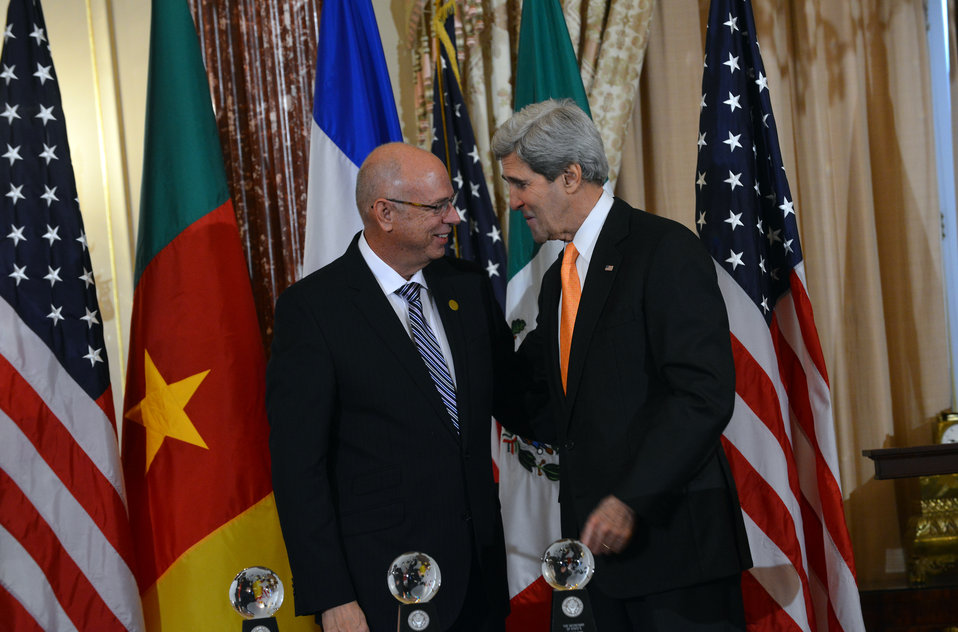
Secretary Kerry Shakes Hands With CEO Taylor of Taylor Guitars

U.S. Secretary of State John Kerry shakes hands with Bob Taylor, the CEO of Taylor Guitars in Cameroon, which received the Secretary of State's Award for Corporate Excellence in the small business category, at the U.S. Department of State in Washington, D.C., on January 29, 2014.